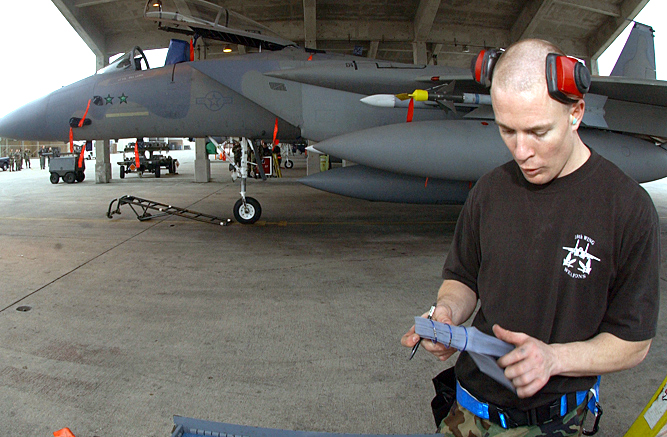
For the win

KADENA AIR BASE, Japan (AFPN) -- Staff Sgt. Matthew Andrews reads through a checklist after all the munitions have been loaded to assure compliance. Airmen competed in a load crew competition Jan. 27. The load crew competition evaluates the Airmen's timeliness and accuracy of loading munitions.